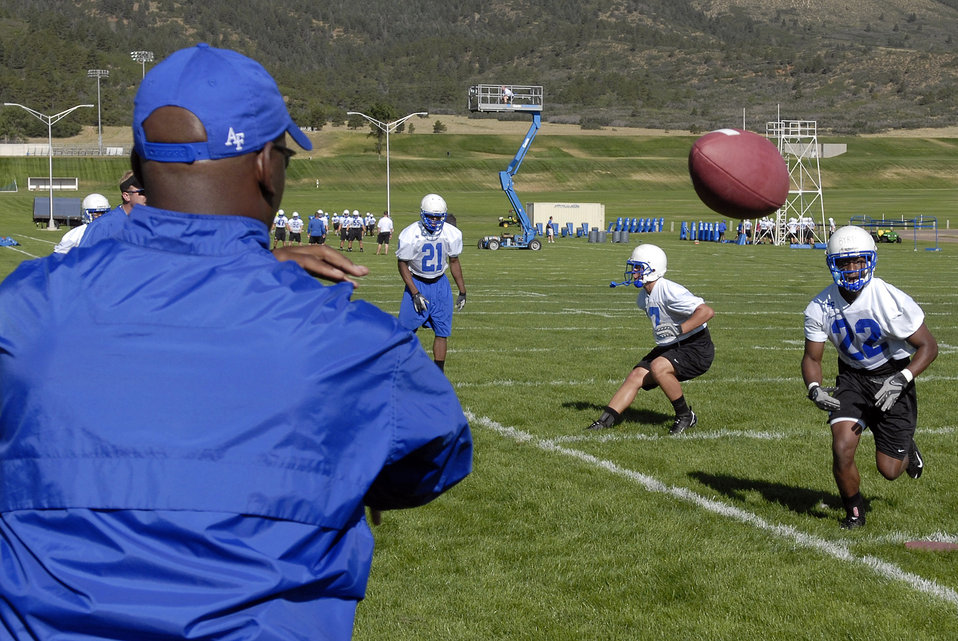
First day of football practice at the Academy

Cornerback Cadet 2nd Class Brenton Byrd-Fulbright participates in drills as the Falcons practice in preseason camp July 31 at the U.S. Air Force Academy in Colorado.